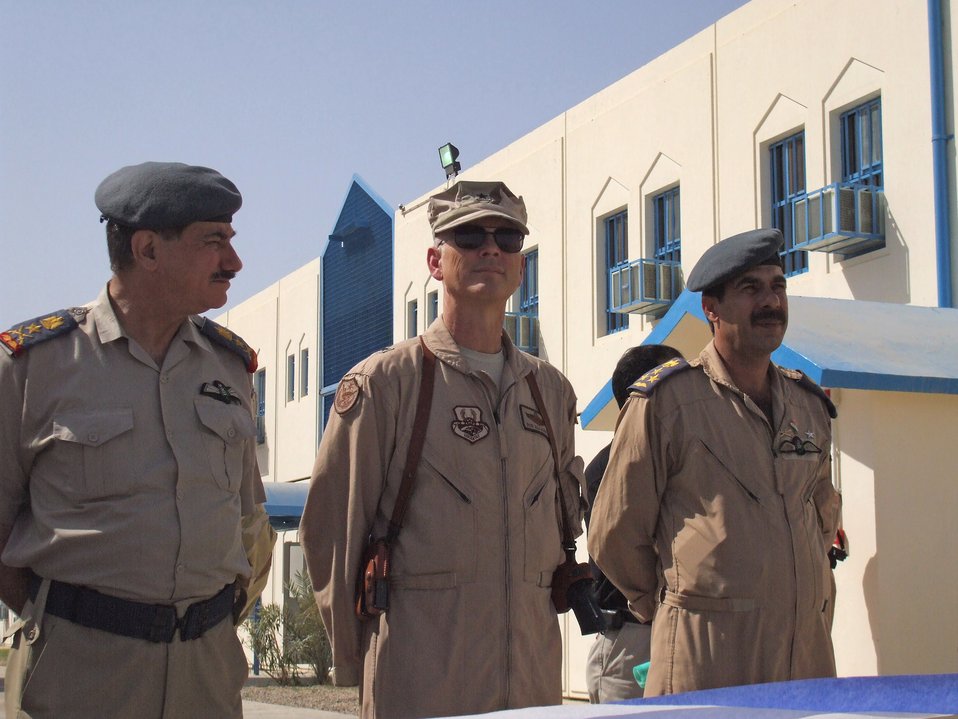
Symbol of tyranny replaced: victory for Iraq air force

Lt. Gen. Kamal Brazanjay (left) and Brig. General Robert R. Allardice join the commandant of the new Iraqi Air Force Training School for a dedication ceremony held Sept. 12at Taji Air Base, Iraq. General Brazanjay, is the commander of the Iraqi Air Force and General Allardice is the commander of the Coalition Air Force Transition Team.